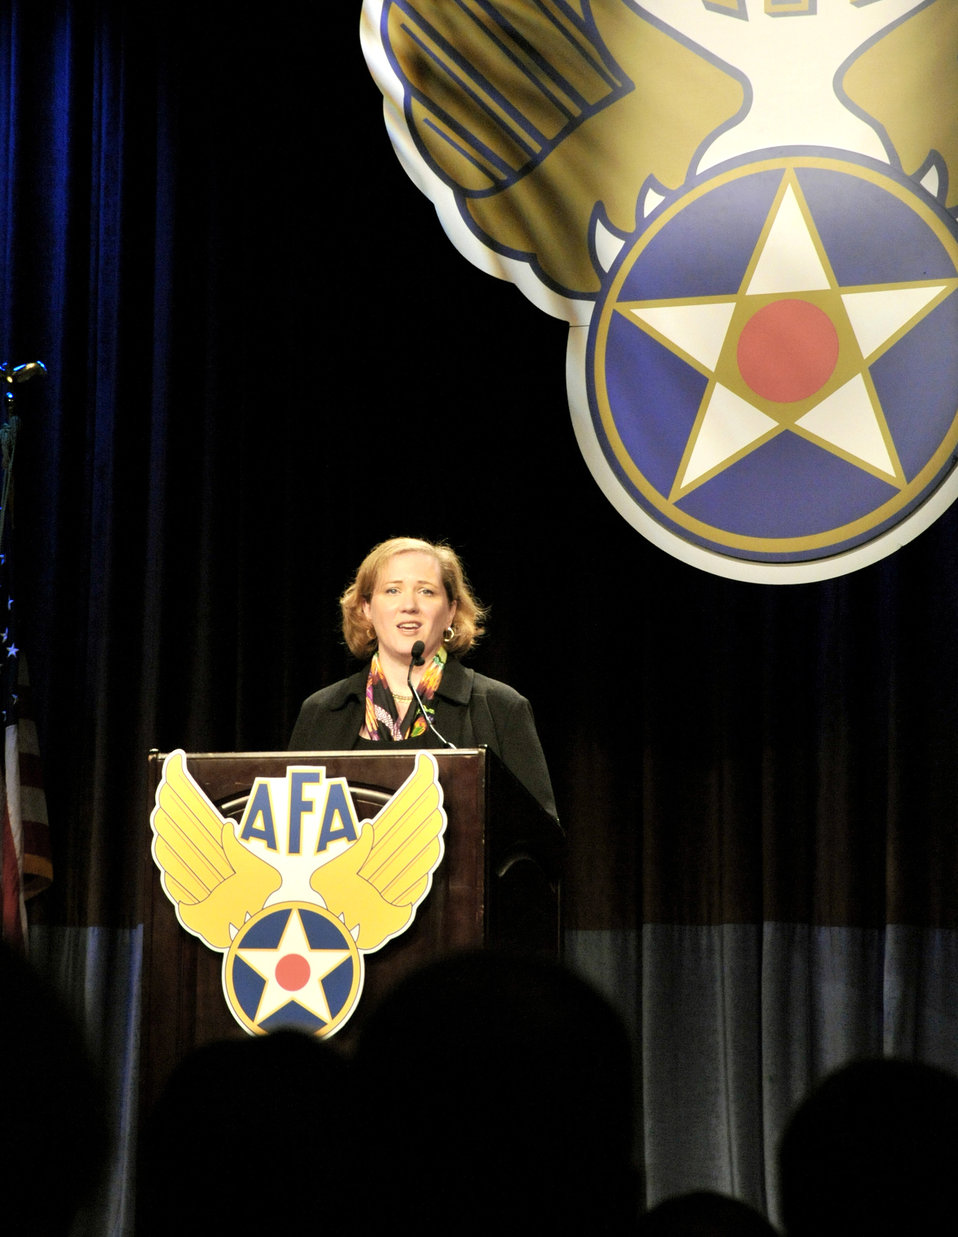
California AFA Symposium

Undersecretary of the Air Force Erin Conaton speaks to attendees at the Air Force Association's 2010 Global Warfare Symposium Nov. 18, 2010, at the Beverly Hilton Hotel in Los Angeles.